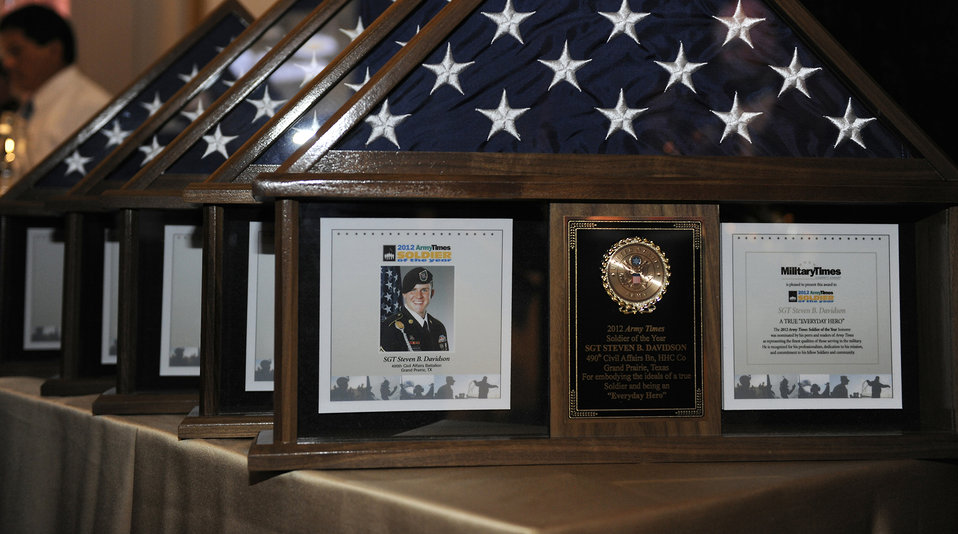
Times Airman of the Year

The set of awards await presentation prior to the 2012 Military Times Service Members of the Year Awardsawards ceremony July 19, 2012, in Washington, D.C. at the Cannon House Office Building, where the Air Force honoree, Master Sgt. Brandon Lambert of the 728th Air Control Squadron, Eglin Air Force Base, Fla., is recognized for his service. on July 19, 2012, in Washington, D.C. Air Force Chief of Staff Gen. Norton Schwartz; Army Vice Chief of Staff Gen. Lloyd Austin III; Chief of Naval Personnel and Deputy Chief of Naval Operations Vice Admiral Adm. Scott Van Buskirk; U.S. Coast Guard's Deputy Commandant for Mission Support Vice Admiral Adm. Manson Brown; and the Director of Marine Corps Staff Lt. Gen. Willie Williams presented the awards to the recipients in from their respective services.